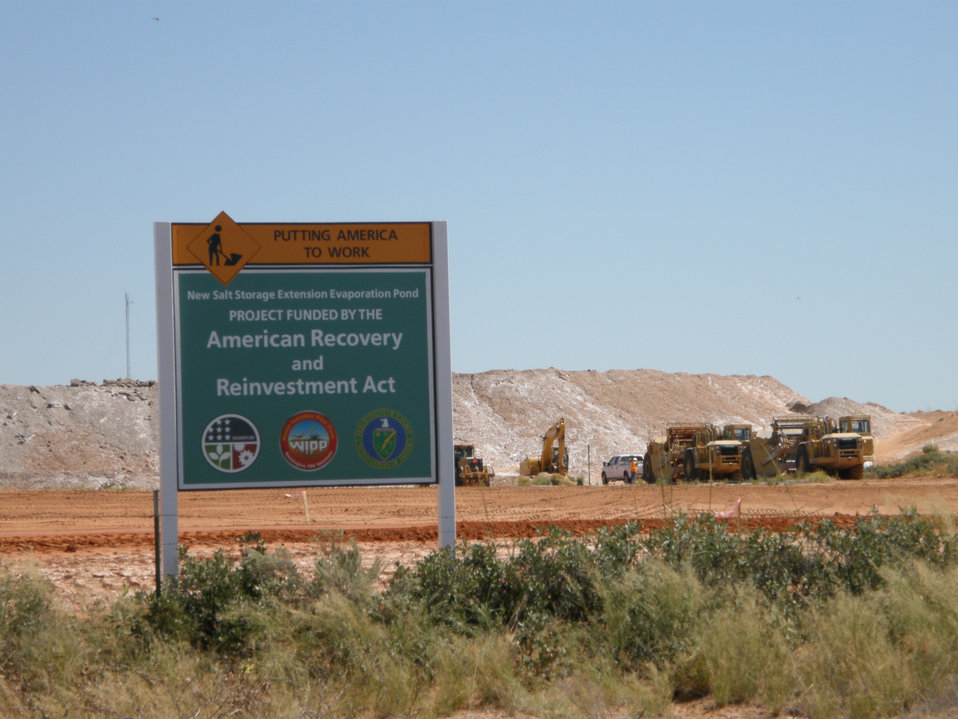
Recovery Act Accelerates Transuranic Waste Disposal Across DOE Complex